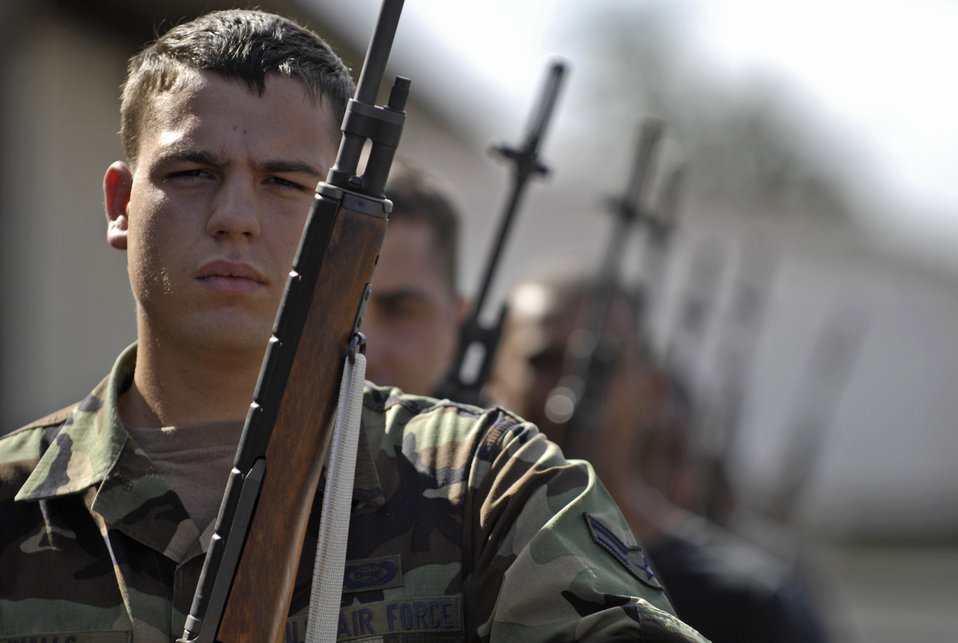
Honoring customs

Members of the 15th Airlift Wing Honor Guard practice gun salute firing positions at Hickam Air Force Base, Hawaii, Oct. 25. The base honor guard emphasizes the importance of military customs and courtesies, dress and appearance, and drill and ceremony.